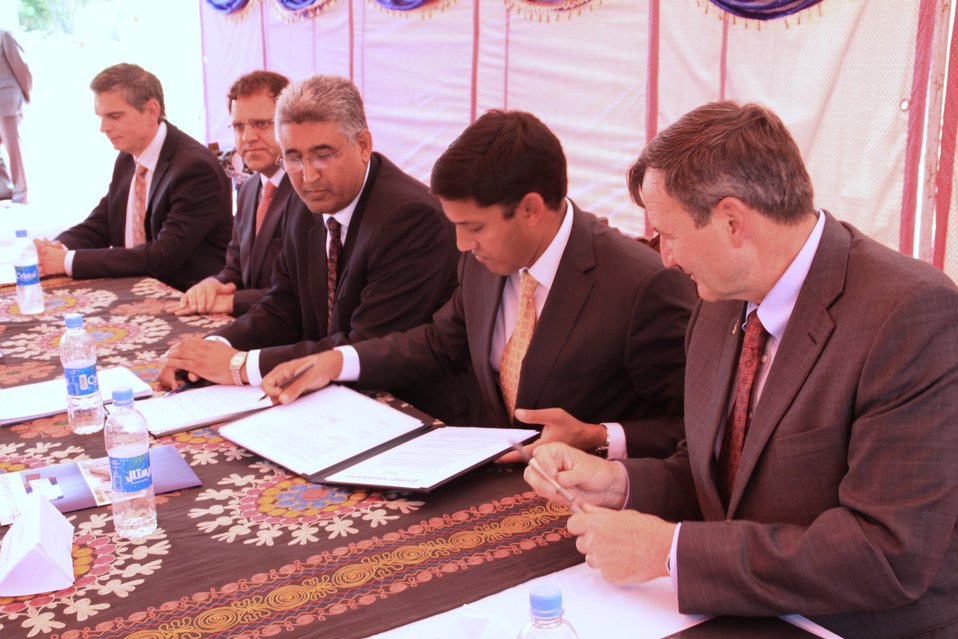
Badam Bagh Farm